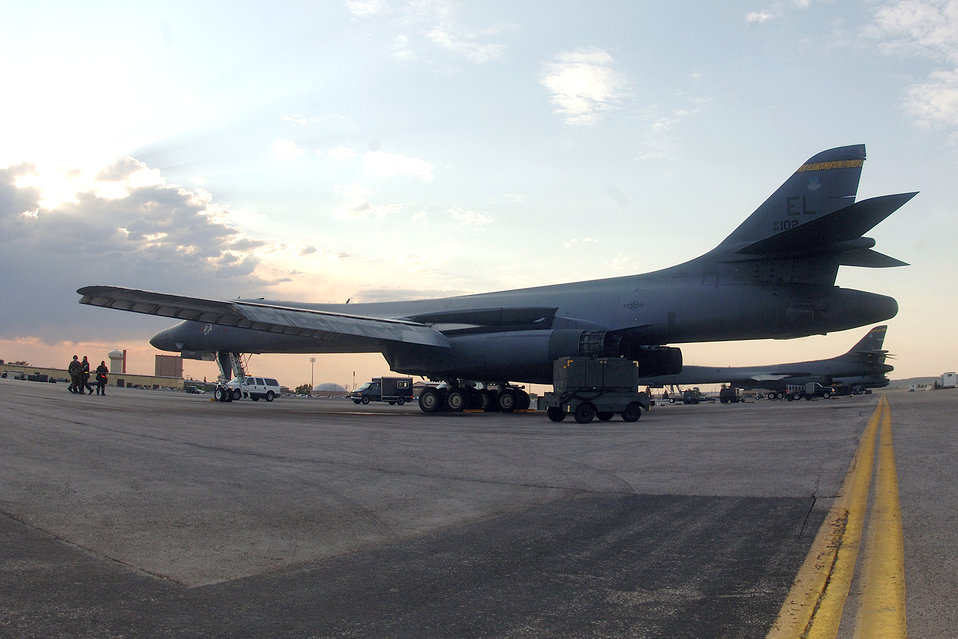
Routine checkup

B-1 Lancers from the 28th Bomb Wing sit on the flightline during an operational readiness inspection at Ellsworth Air Force Base, S.D., on July 18.